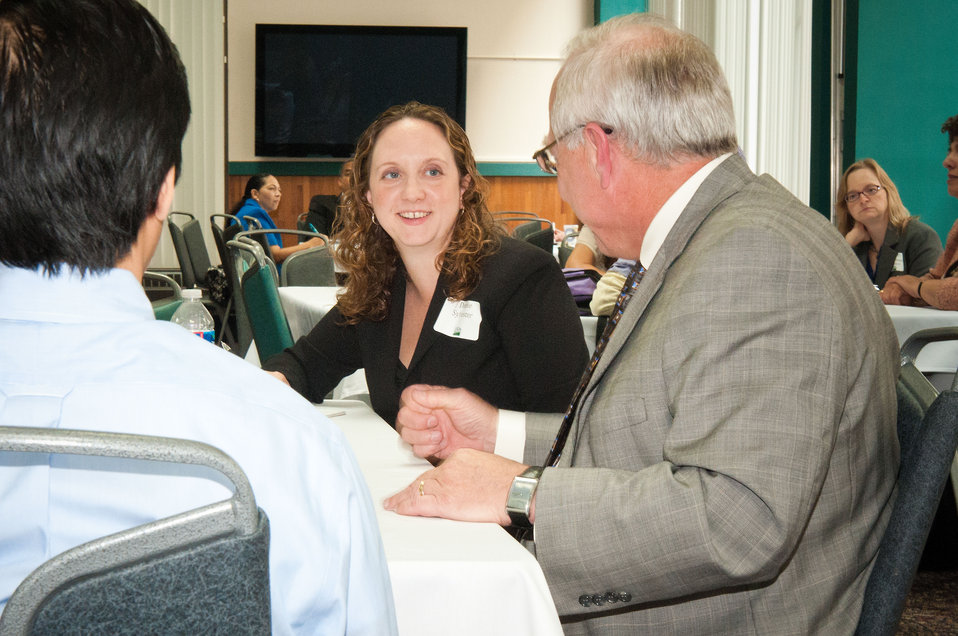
U.S. Department of Agriculture (USDA) Agricultural Marketing Service Denise Sylvester and USDA Office of Chief Economist (OCE) and mentor Dr. Harry Baumes “Project Management” at USDA’s Office of Human Resources Management (OHRM) Virtual University’s Fall Flash Mentoring Event at USDA in Washington, D.C. on Thursday, Sept. 6, 2012 in Washington, DC.